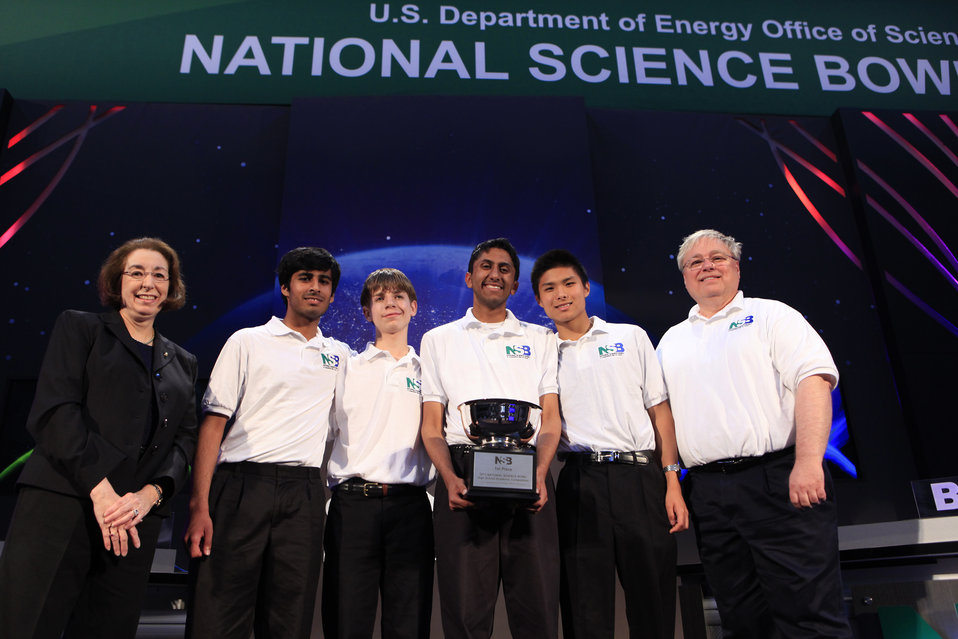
Students from Mira Loma High School from Sacramento, CA won first place in the 2013 National Science Bowl in Washington, DC.

The Department of Energy created the National Science Bowl in 1991 to encourage students to excel in mathematics and science and to pursue careers in these fields.